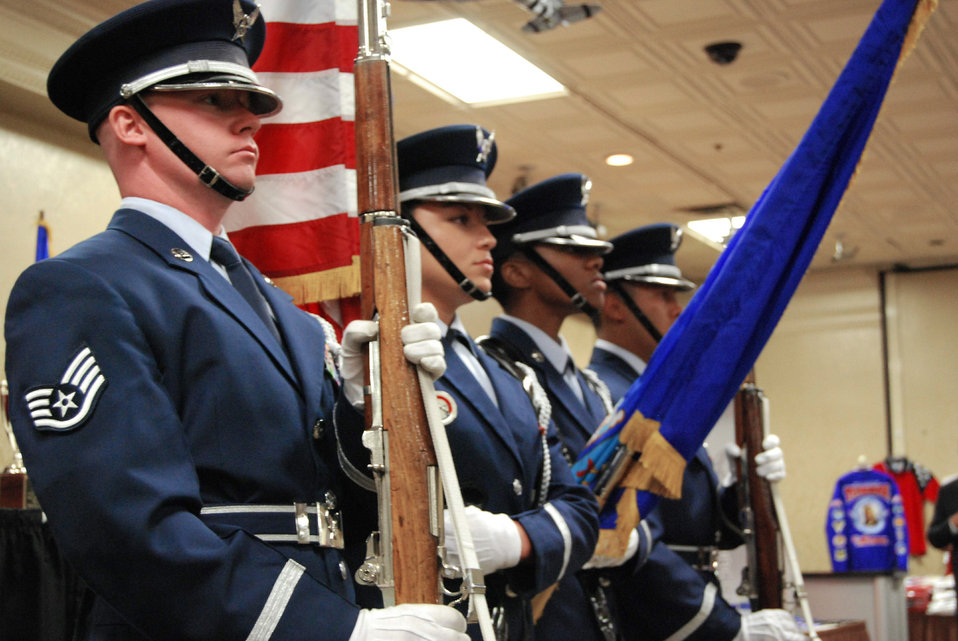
'Top Guns' receive awards at Tuskegee Airmen convention

Nellis Air Force Base Honor Guard members post the colors during the Top Guns award ceremony Aug. 6 at the Palace Station Hotel in Las Vegas. The ceremony was part of the 38th Annual Tuskegee Airman Inc. National Convention Aug. 6 through 9.